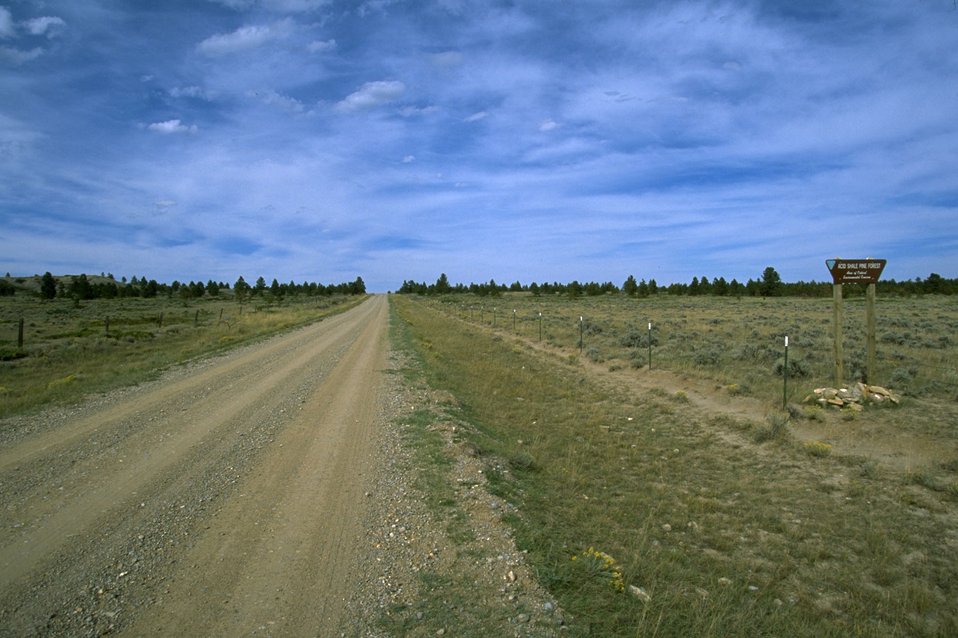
Acid Shale Area of Critical Environmental Concern (ACEC) road